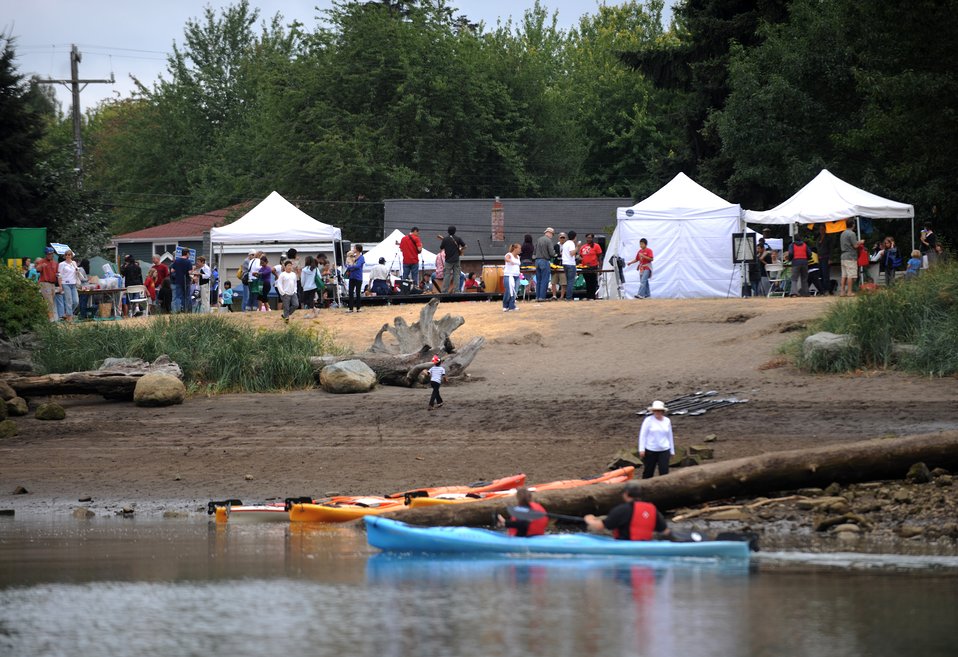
Duwamish River Festival

EPA helped sponsor the 5th Annual Duwamish River Festival, pictured above, on August 8, 2009. This free family-friendly environmental festival provides updates on the Lower Duwamish River Superfund cleanup, kayak tours on the river, live entertainment, water taxi rides, food, children’s activities, health information, natural yard care tips, give-aways and more. Visit www.epa.gov/region10/duwamish to learn more about EPA's efforts to clean up and restore the lower Duwamish River.